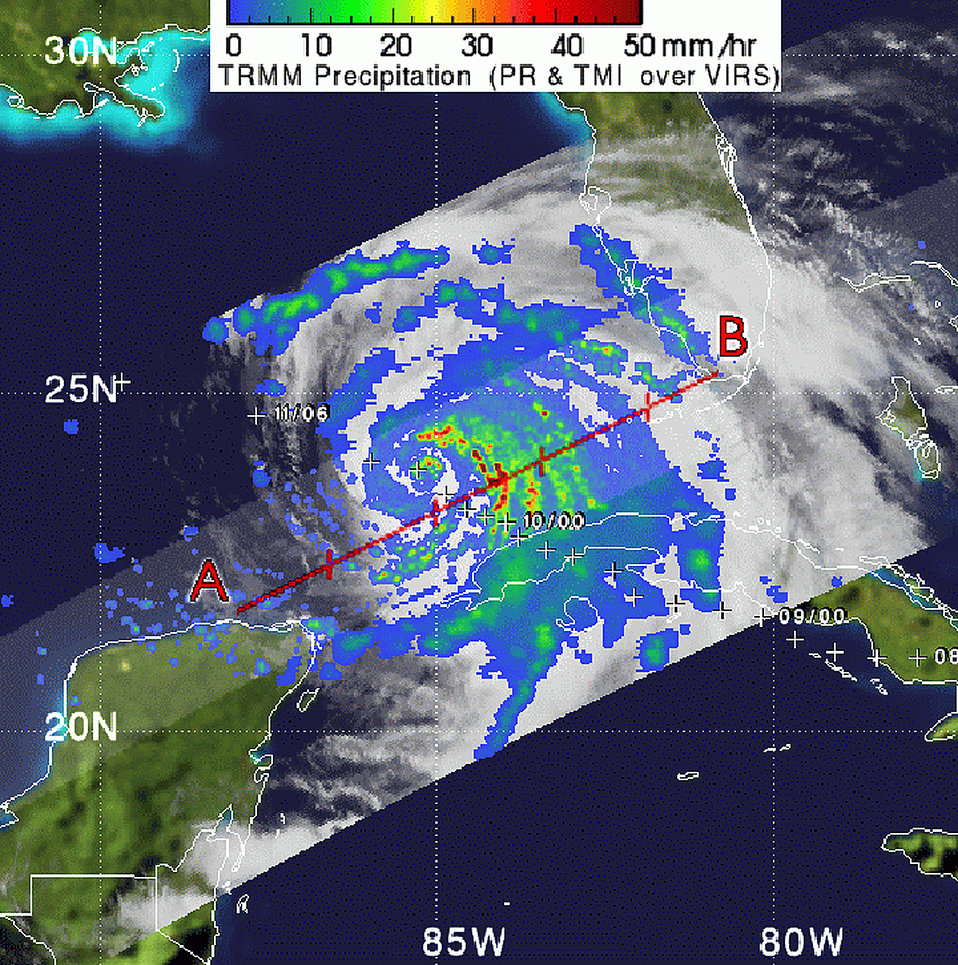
Sept. 11, 2008: Hurricane Ike Larger, Eyeing Landfall Early Saturday in Texas